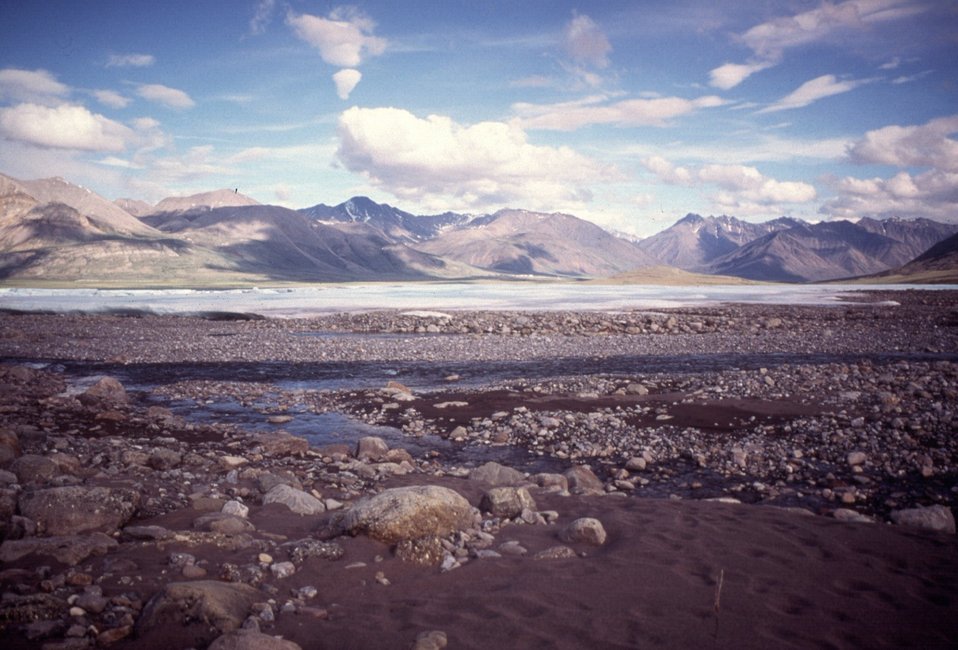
Galbraith Lake, Dalton Highway